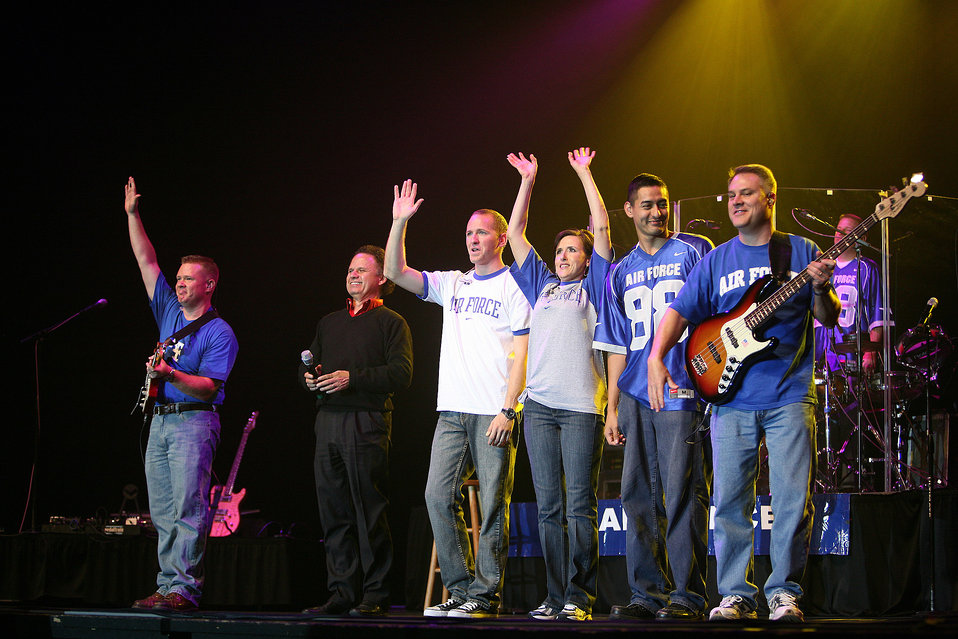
Air Force band rocks for Red Ribbon Week

Members of Top Flight wave goodbye to 2,500 middle school children after a 45-minute performance Oct. 22 at the Lila Cockrell Theater in San Antonio. The popular music ensemble of the Band of the West from nearby Lackland Air Force Base performed four shows in support of Red Ribbon Week, a national observance to raise awareness in youth to make the right decisions about substance abuse and inform them on the dangers of drugs. Standing on stage are Tech. Sgt. Steve Wilson, guitar; local radio personality Sonny Melendrez; Airman 1st Class Clayton Lee, vocals; Tech. Sgt. Donna Silver, vocals; Airman 1st Class Dennis Lambert, keyboards; Tech. Sgt. Doug Bennett, bass guitar; and Master Sgt. Tony DeLuzio, drums.